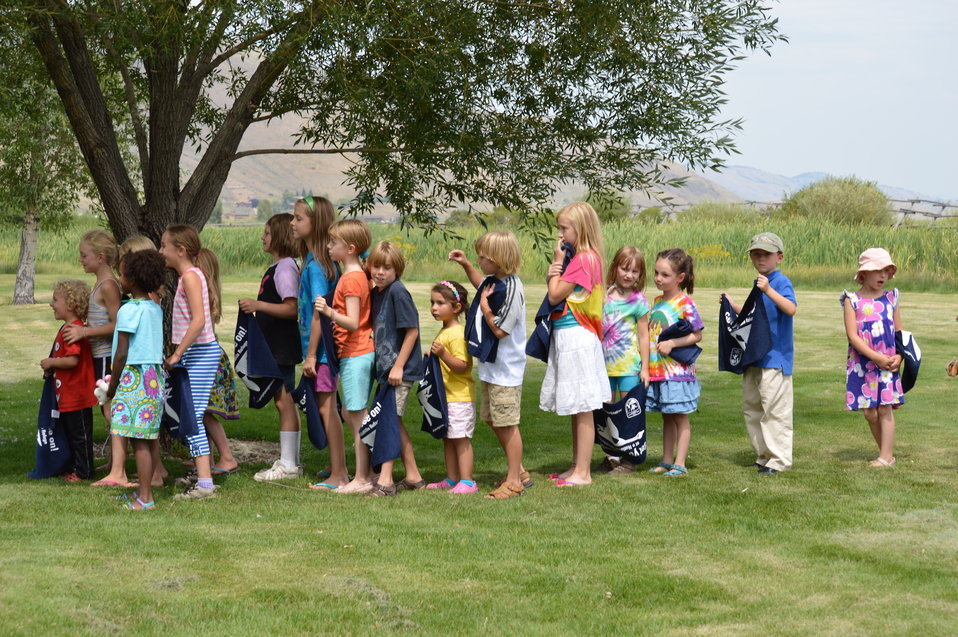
Get Your Goose On! - National Elk Refuge Style

On August 10, 2012 the U.S. Fish and Wildlife Service and Partners celebrated the 100 year anniversary of the establishment of the National Elk Refuge. In these photos, young attendees, along with Puddles the Blue Goose and the National Elk Refuge's mascot, showed us how to Get Your Goose On! with style.